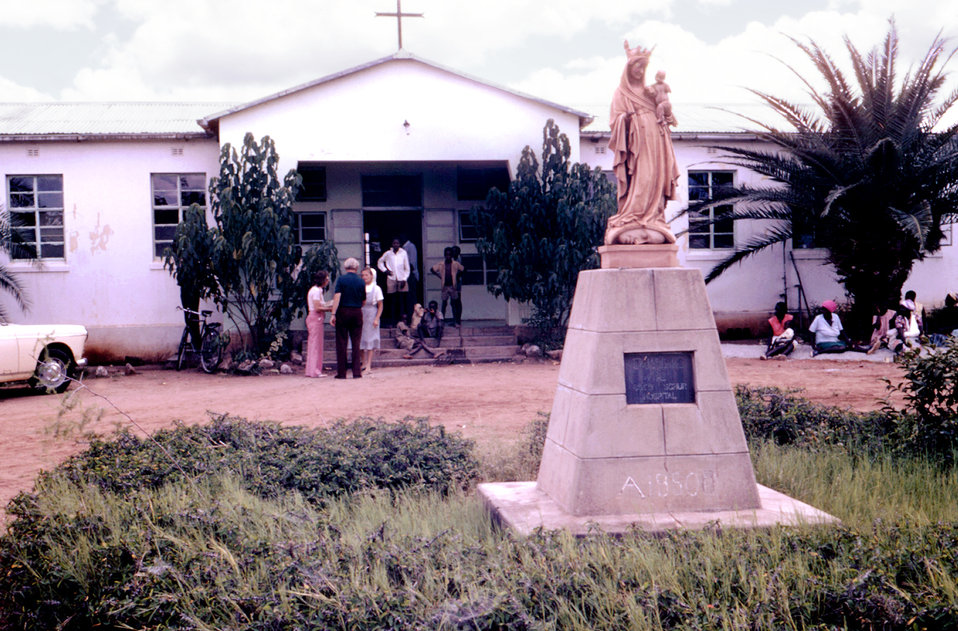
This location was one of the many hospitals visited by public health officials during the 1975 Rhodesian, (now Zimbabwe), Marburg epidemiologic investigation.